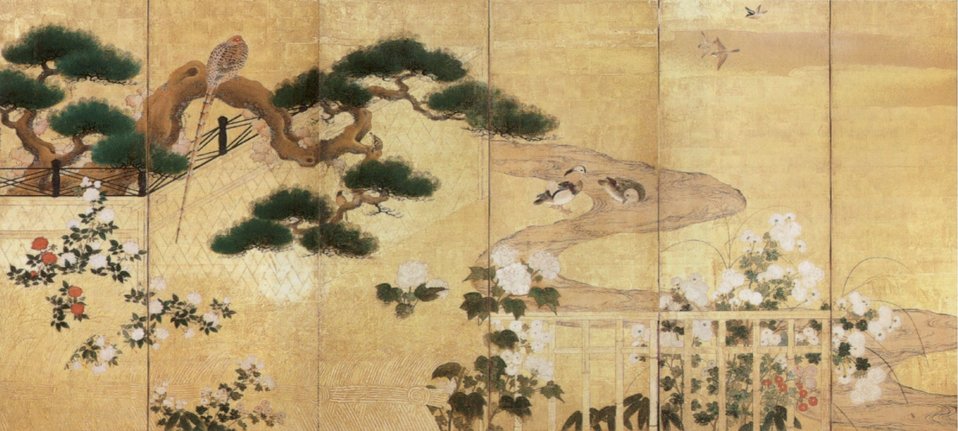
Birds and Flowers, one of two six-panel screens by Kano Koi